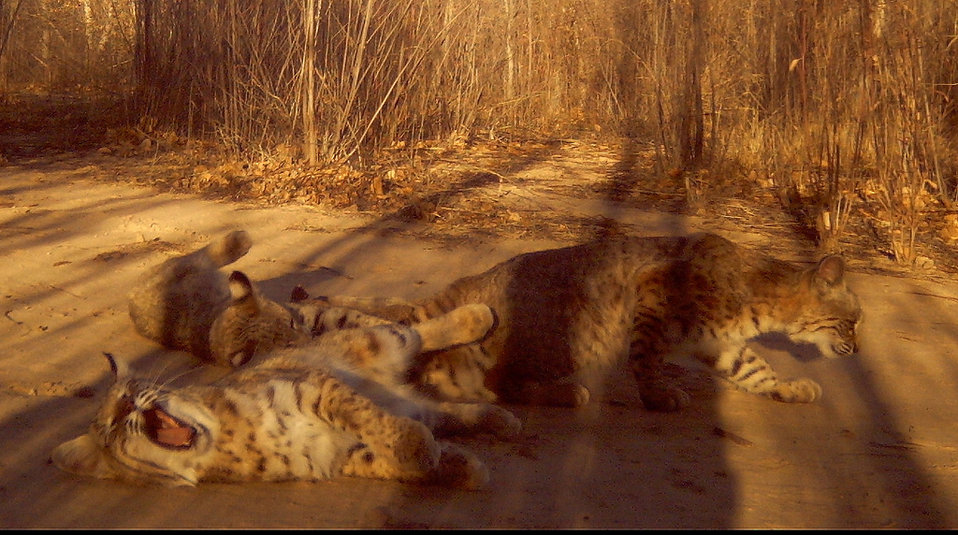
bobcat family

Female bobcat and two young of the year at a scent station.
Bosque del Apache National Wildlife Refuge, NM
Camera trap project by Matthew Farley, Jennifer Miyashiro and James Stuart
Photo made available by J.N. Stuart, Creative Commons